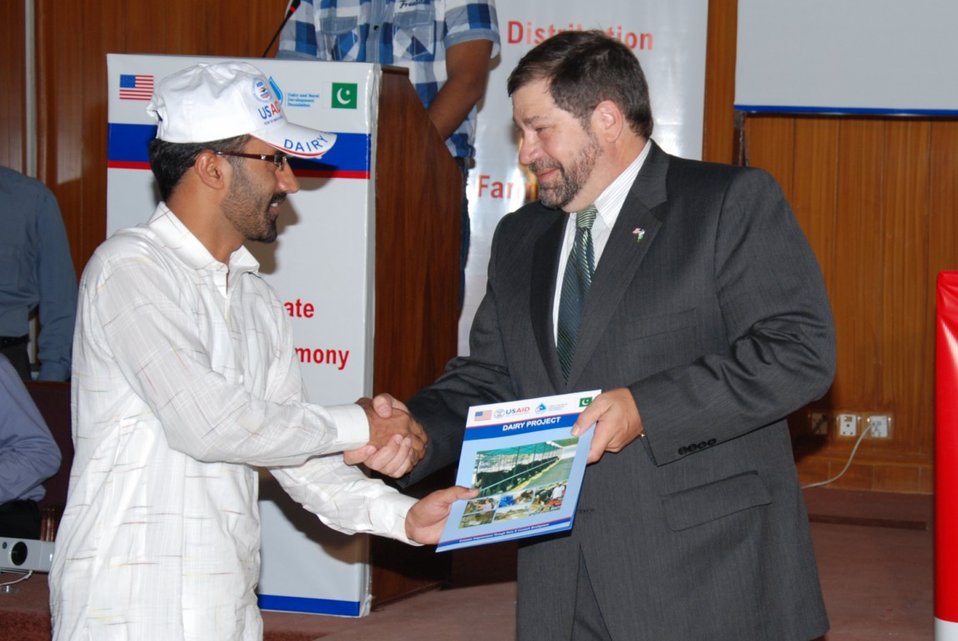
1 -USAID Mission Director Punjab Mr. Jeffrey Bakken awarding certificate to USAID Dairy Project-trained dairy farm managers